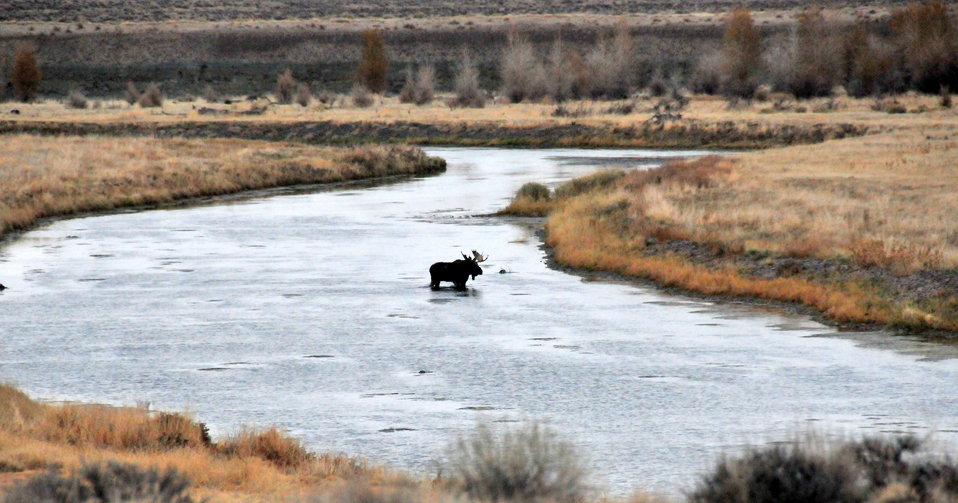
Bull Moose Crosses a side channel of Green River on Seedskadee NWR